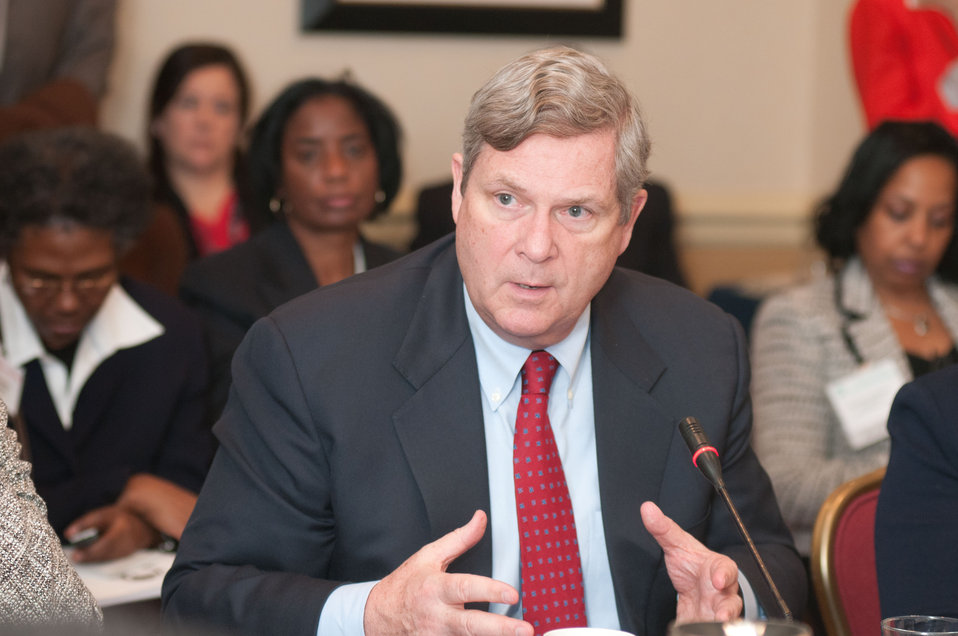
Agriculture Secretary Thomas Vilsack, listens and responds to questions from mayors, during the United States Conference of Mayors 81st Winter Meeting, Food Policy session in Washington D.C., on Thursday, Jan 17, 2013. Some of his responses highlighted the Supplemental Nutrition Assistance Program (SNAP, and see www.fns.usda.gov), Know your Farmer Know your Food (www.usda.gov/wps/portal/usda/usdahome?navid=KYF COMPASS) and many other ways that rural America makes a difference.